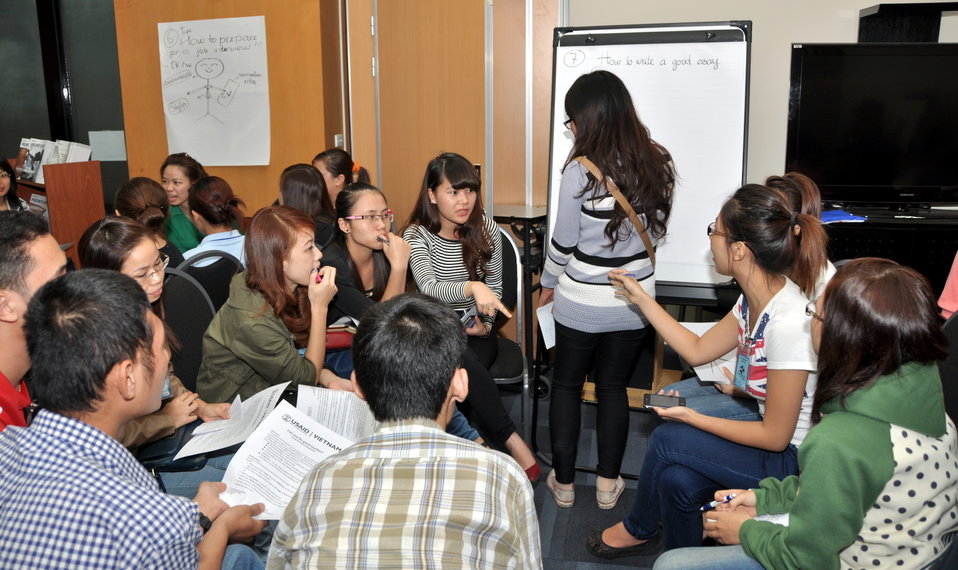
Students join the ‘USAID and Higher Education in Vietnam’ talk

Photo: @USAIDVietnam, November 19, 2012